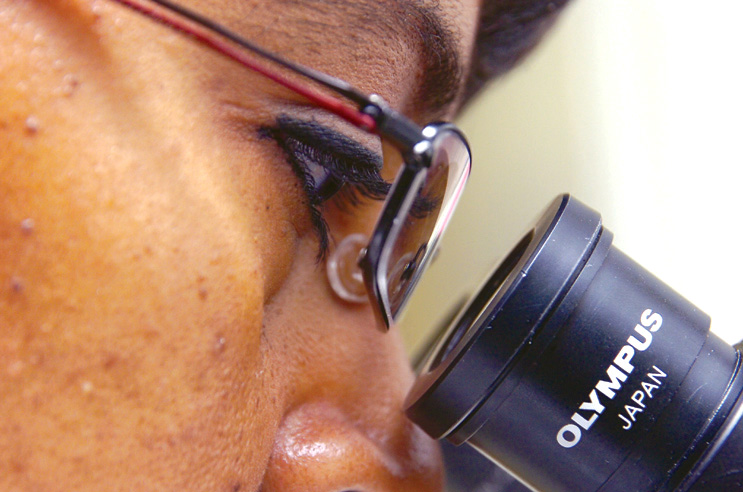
Histopathology provides rapid diagnosis

Helena Smalls peers through a microscope to determine a type of fungus. Ms. Smalls is a histopathology technician with the 89th Medical Support Squadron pathology department at Andrews Air Force Base, Md.